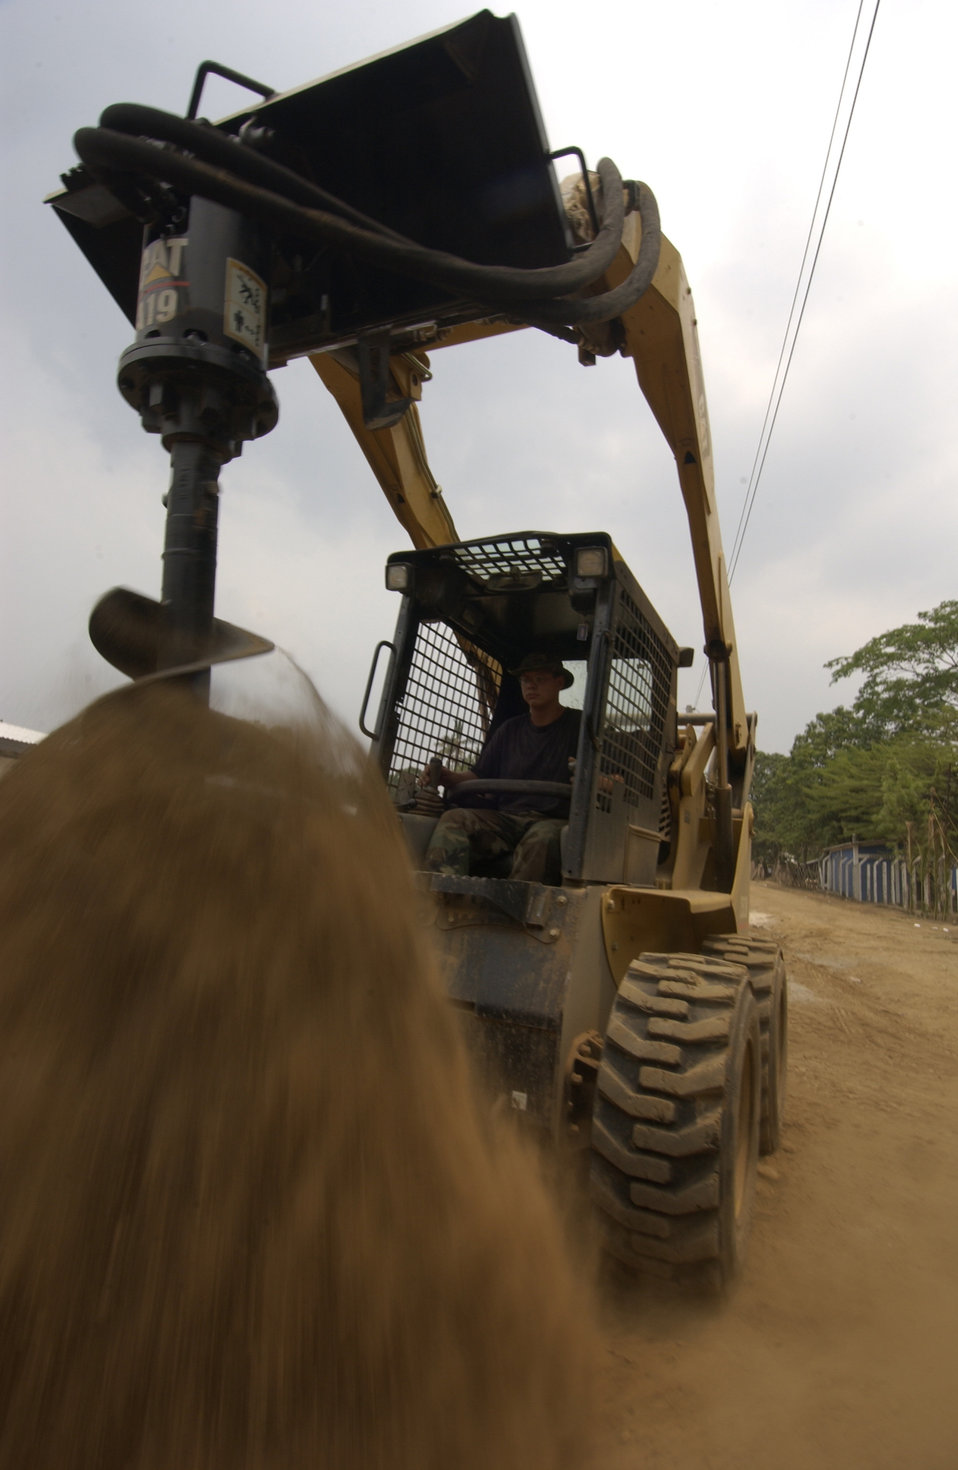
Big cat

SAN VICENTE, El Salvador -- Airman 1st Class John Merchant uses a Bobcat to drill fence post holes at a school building project here April 29. The school is part of a New Horizons exercise project that is buiding two new schools and three clinics in areas that were hit by earthquakes. Airman Merchant is assigned to the 99th Civil Engineer Squadron at Nellis Air Force Base, Nev.